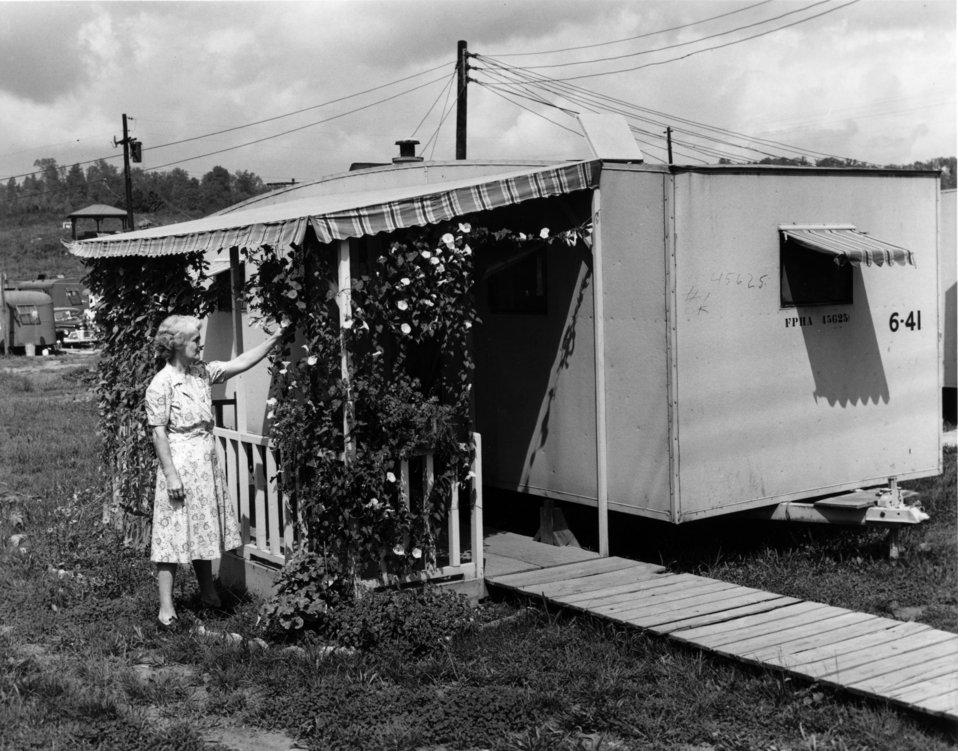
Housing at Oak Ridge